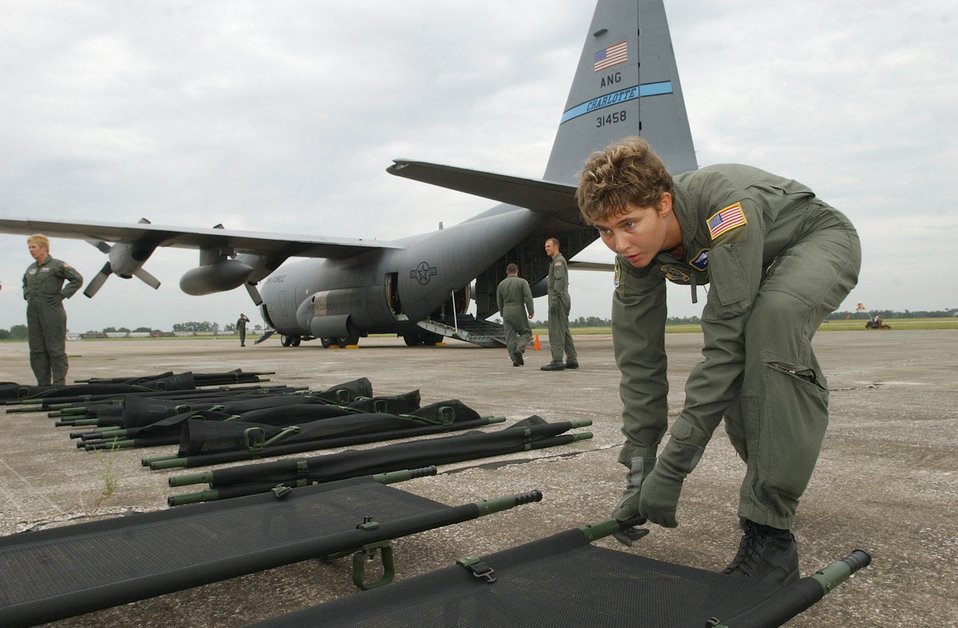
Hurricane Rita Support

SEBRING AIRPORT, Fla. -- Senior Airman Amanda Sugg sets up cots here that were used in a C-130 to transport more than a dozen elderly Hurricane Rita evacuees back to Key West, Fla. Airman Sugg is an aeromedical technician attached to the North Carolina Air National Guard's 156th Aeromedical Squadron.